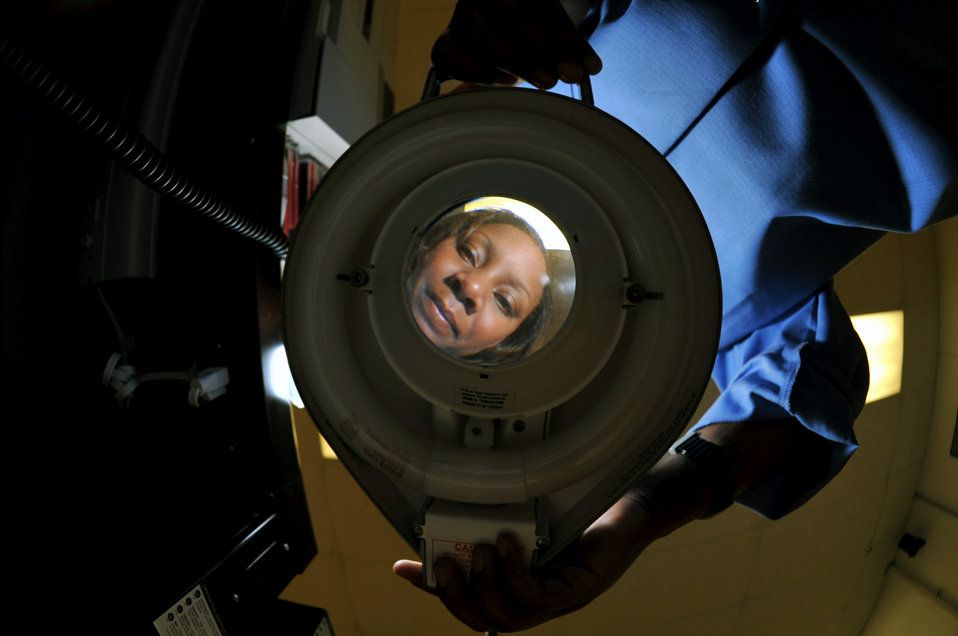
Take a closer look

Staff Sgt. Donnecha Blackmon looks through a magnifying glass used to repair circuit cards July 21, 2010, at Whiteman Air Force Base, Mo. Sergeant Blackmon is with the 509th Maintenance Group.